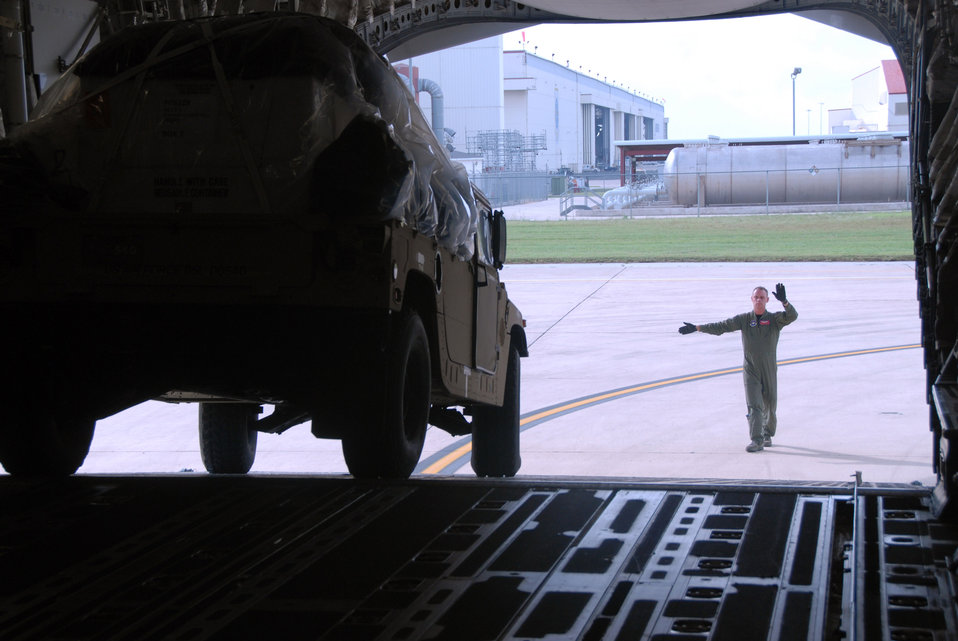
Altus crews help prepare for Hurricane Ike

Staff Sgt. Jon Jackson directs a Humvee into a C-17 Globemaster III Sept. 10 at Kelly Field, Texas. Supplies were flown to McAllen, Texas, in support of Hurricane Ike preparation efforts. Sergeant Jackson is a loadmaster assigned to the 58th Airlift Squadron from Altus Air Force Base, Okla.